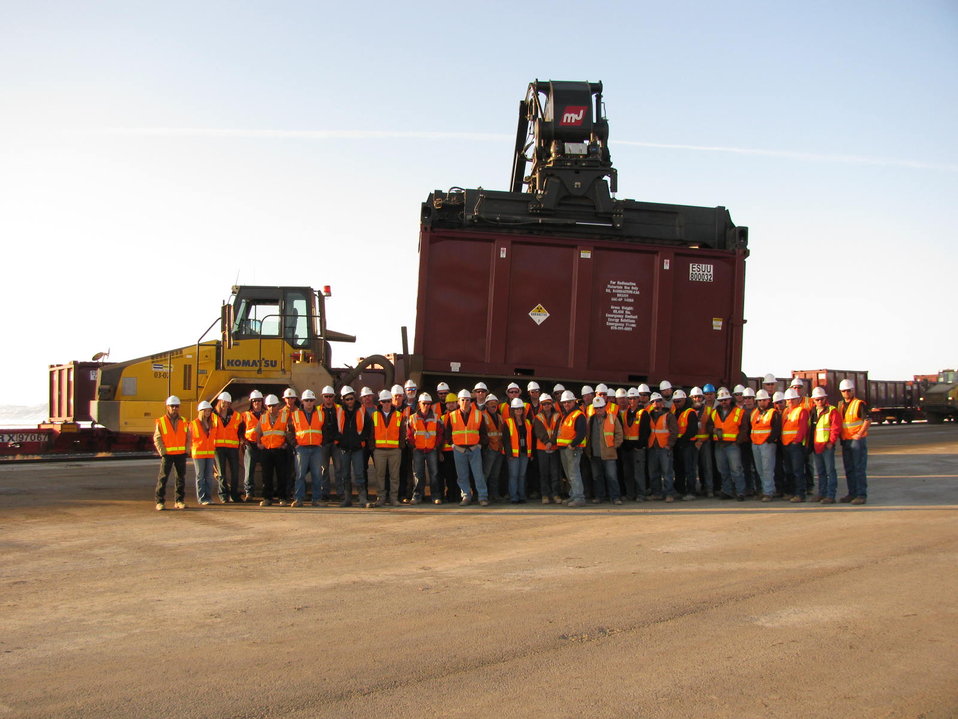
Moab UMTRA Project

The photo is of workers at the Crescent Junction disposal site in Utah in front of the container holding the one millionth ton of uranium mill tailings that was transported from the pile in Moab, Utah. The container is being prepared to be dumped in the disposal cell. Of the first million tons transported for permanent disposal, almost half, or 490,000 tons, was shipped using Recovery Act funding.